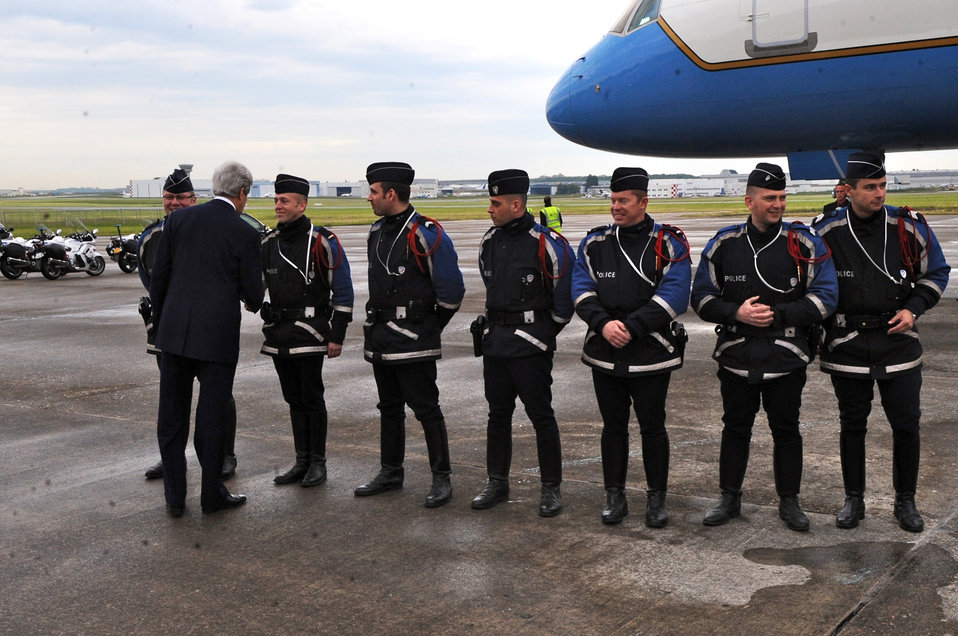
Secretary Kerry Thanks Members of a French Motorcycle Team

U.S. Secretary of State John Kerry thanks members of a French motorcycle team that supported his official motorcade before departing from Paris, France, at the end of an eight-day trip on May 28, 2013.